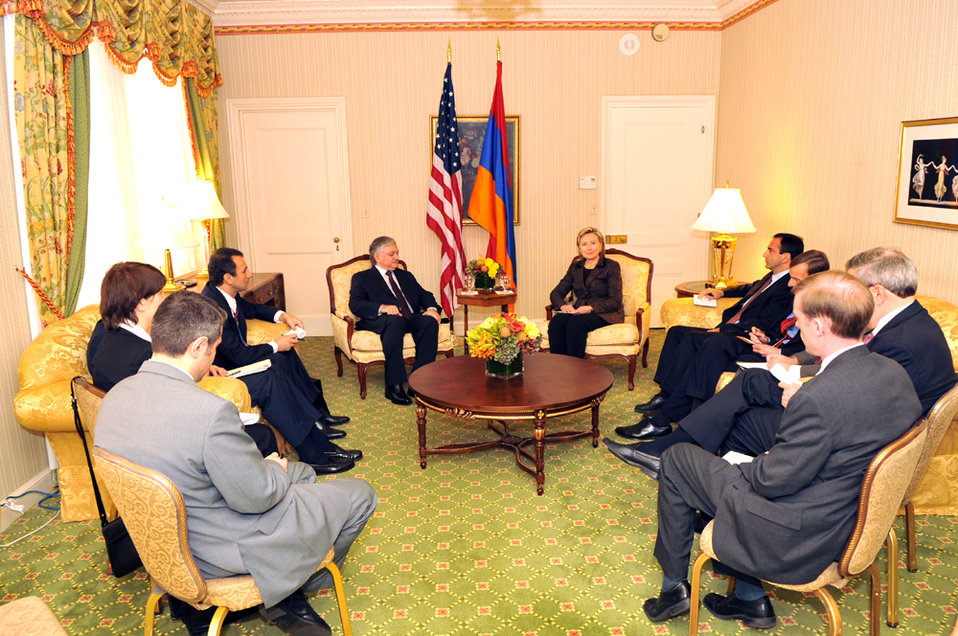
UNGA 2009: Secretary Clinton Meets With Armenian Foreign Minister

U.S. Secretary of State Hillary Rodham Clinton meets with Armenian Foreign Minister H.E. Edward Nalbandian at the Waldorf Astoria hotel in New York City, New York September 28, 2009.